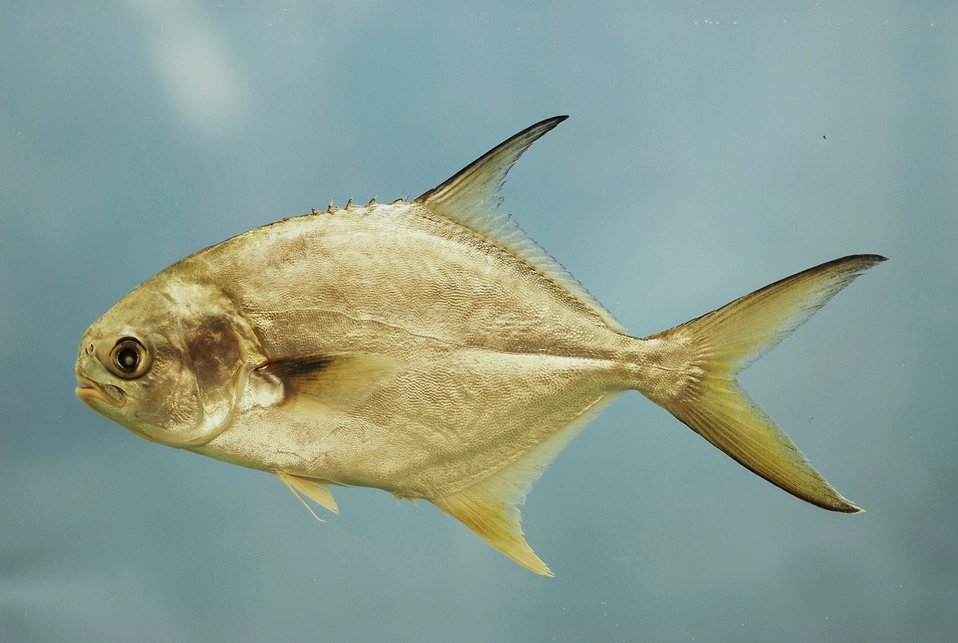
Permit ( Trachinotus falcatus )